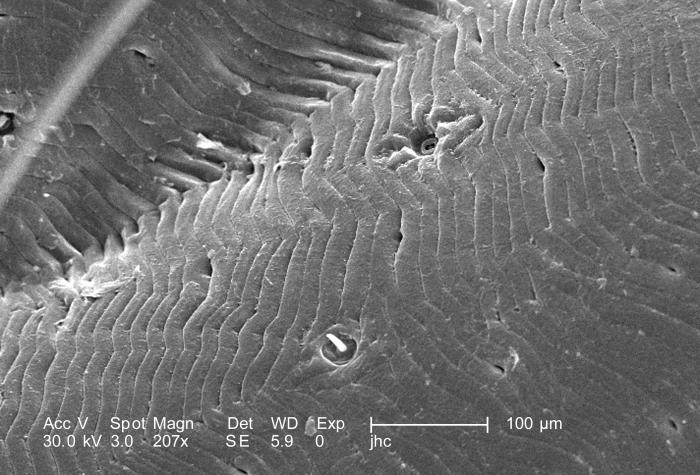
Under a magnification of 207X, this scanning electron micrographic (SEM) image depicted a dorsal view of an unidentified engorged female tick which had been extracted from the skin of a pet cat while in the process of obtaining its blood meal. Seen here, is an enlarged view of the exoskeletal surface of the engorged abdomen, which reveals the wrinkled, expandable tissue that enables the tick to ingest huge quantities of blood.Note in PHIL 9959 and 9960, that in the case of another tick specimen, its entire dorsal abdomen is covered by its chitinous scutum, or 'shield', categorizing it as a male. In this specimen, the scutum only partially covers the dorsal abdomen (see PHIL 9972), which identifies this tick as a female.Ticks belong to the Phylum Arthropoda, due to the fact that they maneuver upon jointed ( 'Arthro') legs ('poda'), as well as the Class Arachnida, for they've eight of these legs, unlike insects, which use six legs to move about.